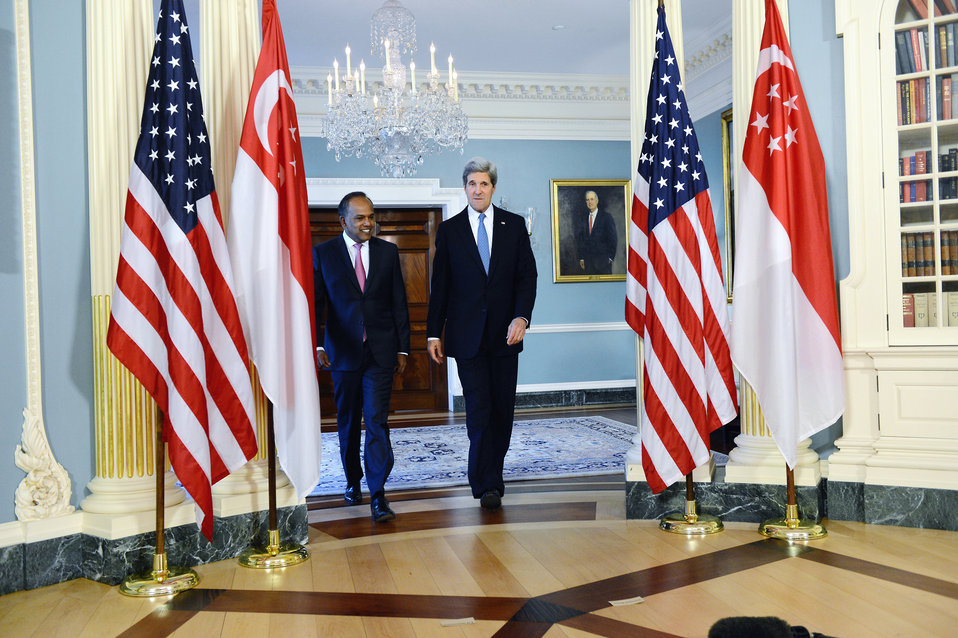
Secretary Kerry Meets With Singaporean Foreign Minister K. Shanmugam

U.S. Secretary of State John Kerry meets with Singaporean Foreign Minister K. Shanmugam at the U.S. Department of State in Washington, D.C., on March 13, 2013.